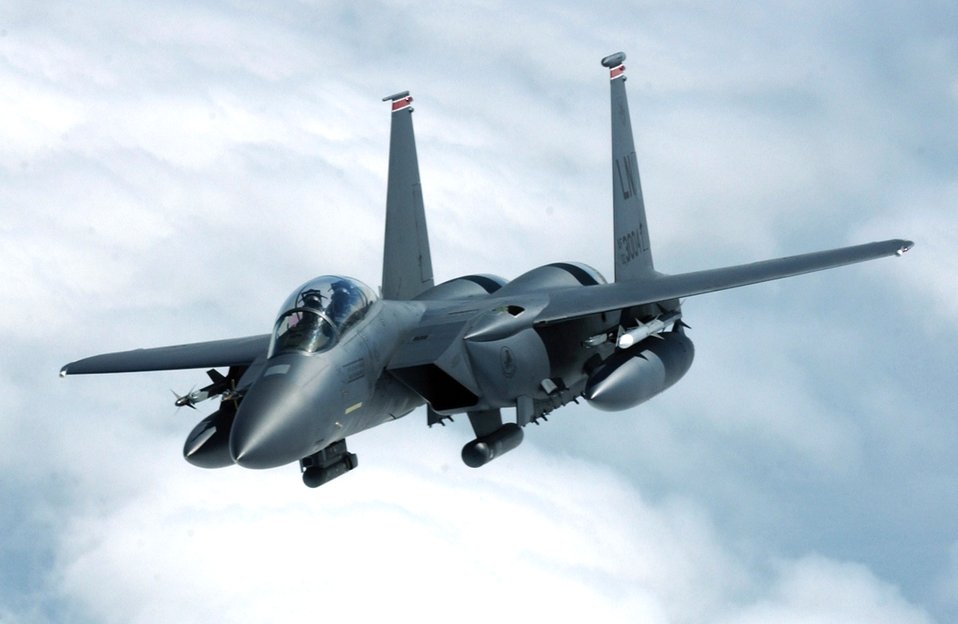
Strike Eagle

OVER THE NORTH SEA -- An F-15E Strike Eagle from the 494th Fighter Squadron, Royal Air Force Lakenheath, United Kingdom, banks away after receiving fuel during a training mission here July 19. The F-15E Strike Eagle is considered the most advanced two-seat tactical aircraft in the world. The